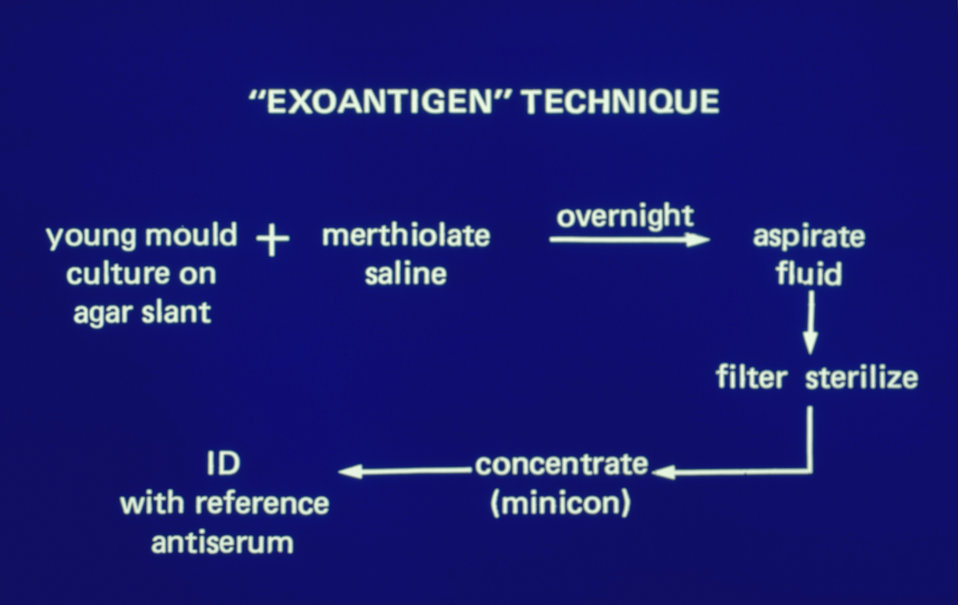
Steps of "exoantigen" technique